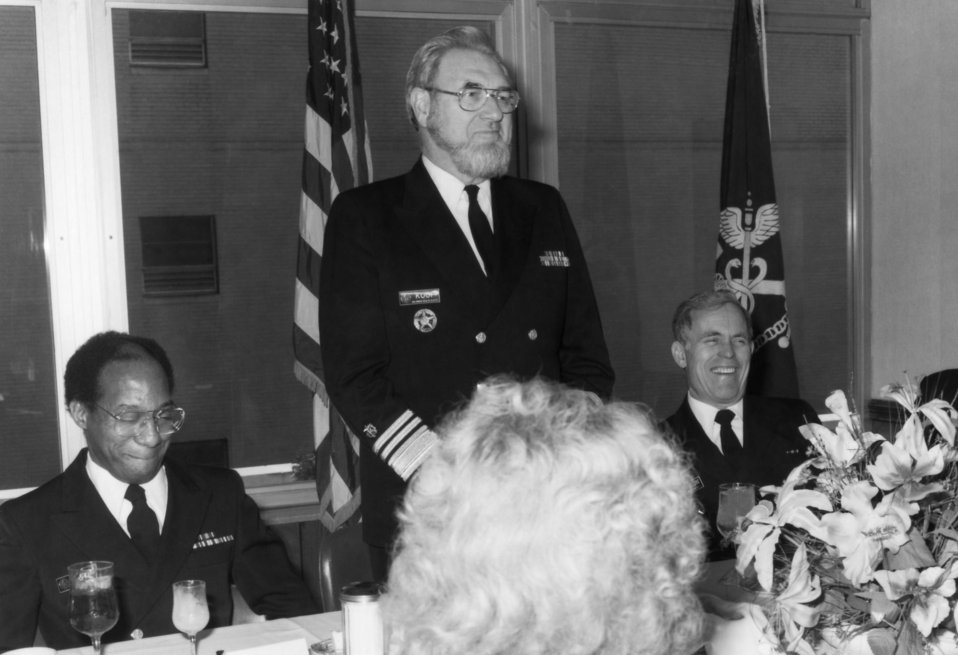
Standing, the U.S. Surgeon General, Dr. C. Everett Koop (1981 - 1989), was shown here as he was presenting Assistant Surgeon General Dr. James O. Mason at right, with the Public Health Service (PHS) Distinguished Service Medal (DSM) for his superior service as Acting Assistant Secretary for Health from February through November 1985. At left, was former Acting Director of the Centers for Disease Control, Dr. Donald Hopkins.